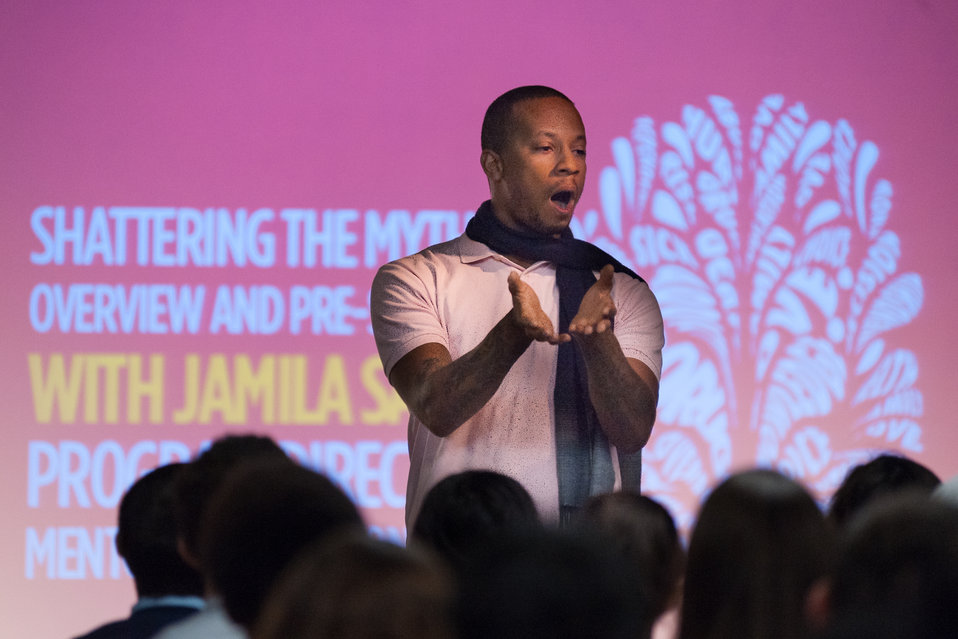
Mentor NDFW Event 2014

Mentor Foundation USA, in partnership with the National Institute on Drug Abuse (NIDA) and other key partners hosted a Youth Drug Facts Rally at the House of Sweden on Thursday, 30th January 2014. Approximately 200 students from five local high schools attended and had the opportunity to interact with top U.S. scientific experts, and inspiring guest speakers to “shatter the myths” about drugs and substance abuse, while pledging to stay drug-free.